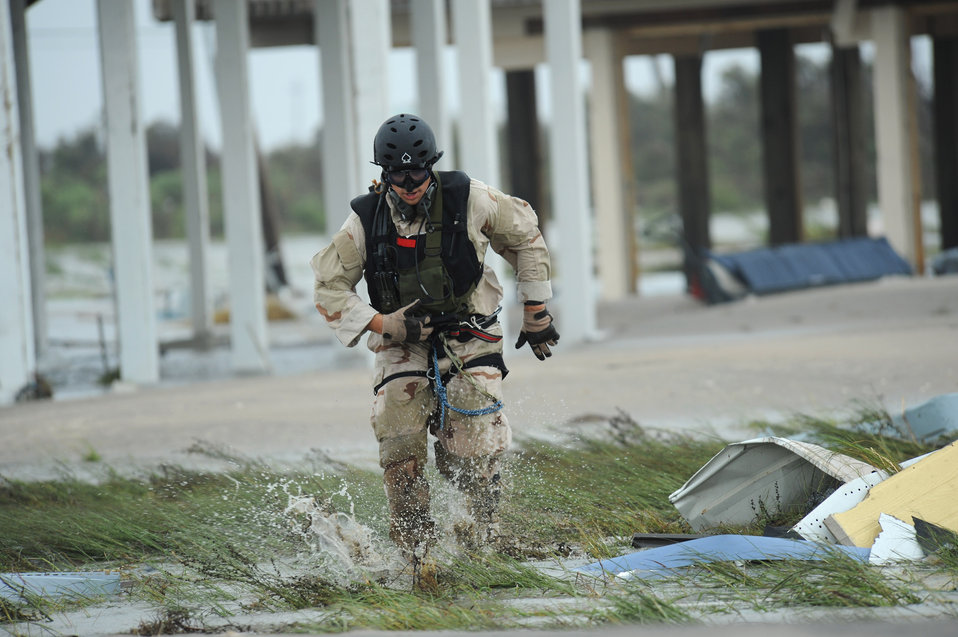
Airmen conduct search, rescue

Pararescueman Staff Sgt. Lopaka Mounts conducts search and rescue operations in Galveston, Texas, after Hurricane Ike, Sept. 13. Sergeant Mounts is assigned to the 331st Air Expeditionary Group at Randolph Air Force Base, Texas.